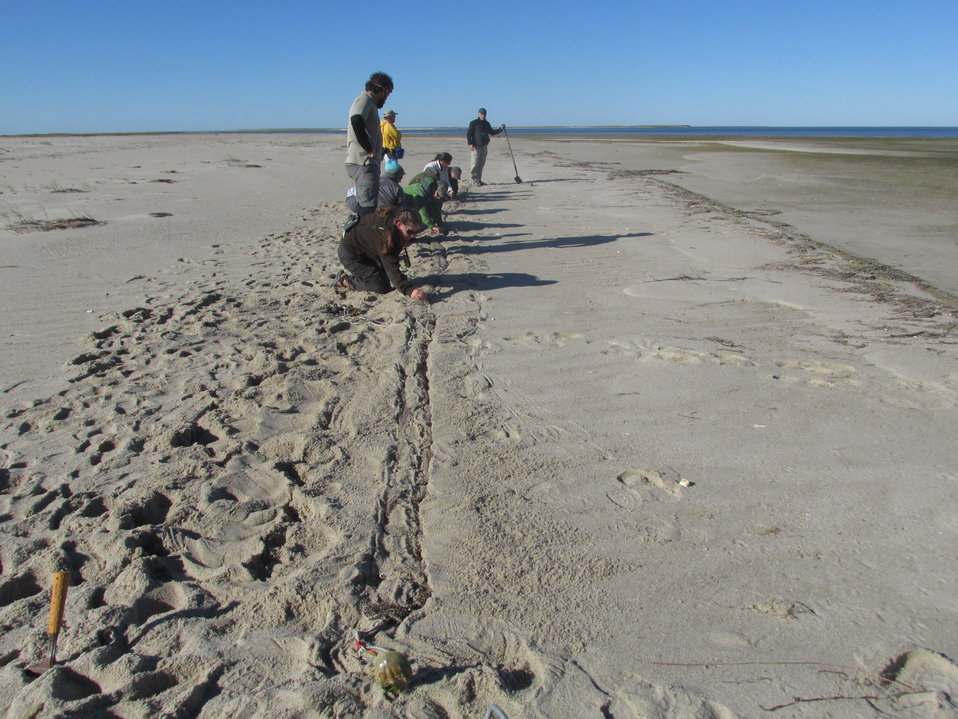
Red knot cannon netting in Cape Cod

The cannon-netting team prepares the nets at the Wasteland on South Beach.